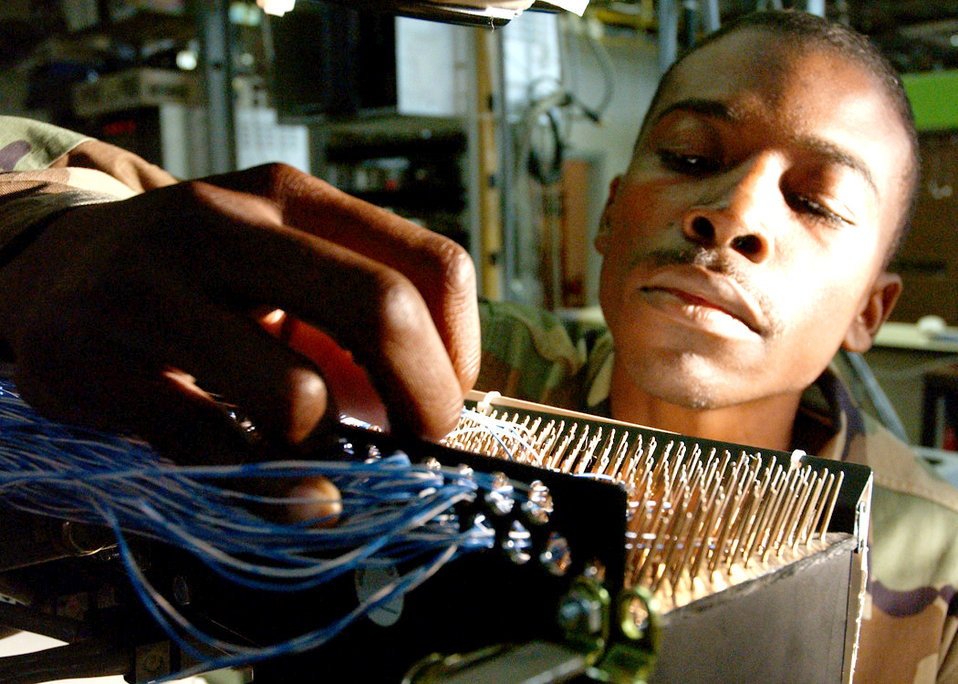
Lines of communication

EIELSON AIR FORCE BASE, Alaska -- Airman 1st Class Broderick Williams traces a jumper connection to a building here July 18. He is a voice network technician with the 354th Communications Squadron.